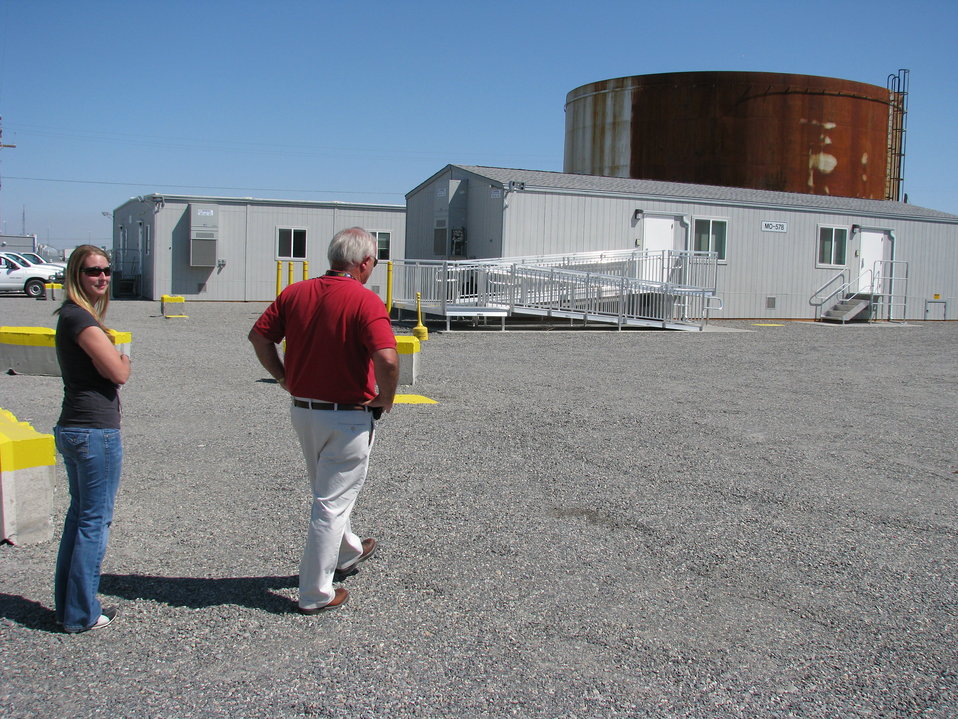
New ORP facilities

A new trailer complex recently completed at Hanford will house a cross section of more than 80 tank farm workers. The new facilities provide updated accommodations for the workforce and will help support long-term tank farm work for the duration of the cleanup mission.